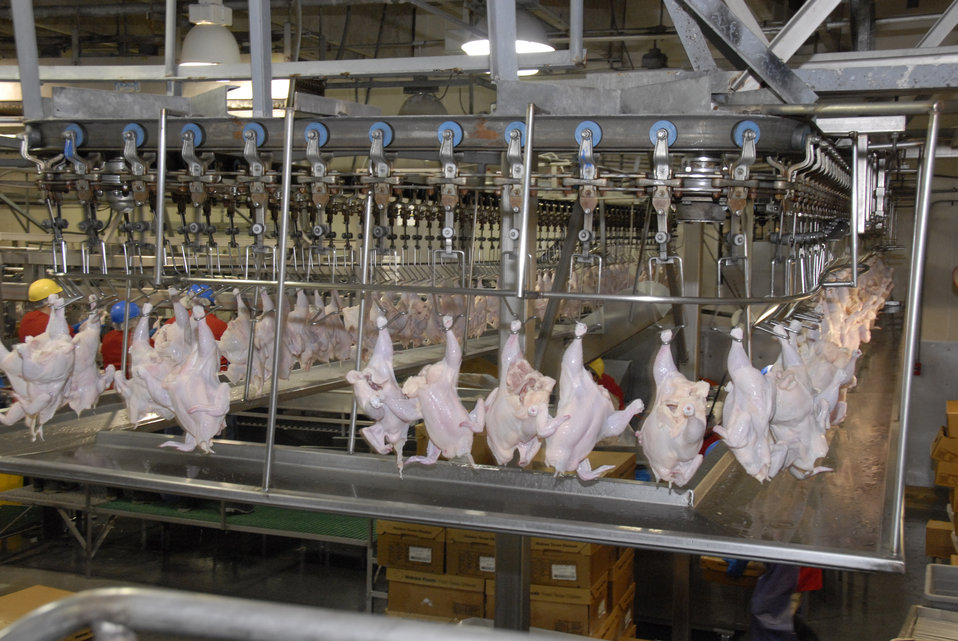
Chickens are carried through the Holmes poultry slaughterhouse in Nixon, Texas on June 10, 2008 on mechanical arms. U.S. Department of Agriculture (USDA) Food Safety and Inspection Service (FSIS) inspectors are on site to ensure the chicken is processed in accordance with USDA FSIS regulations.